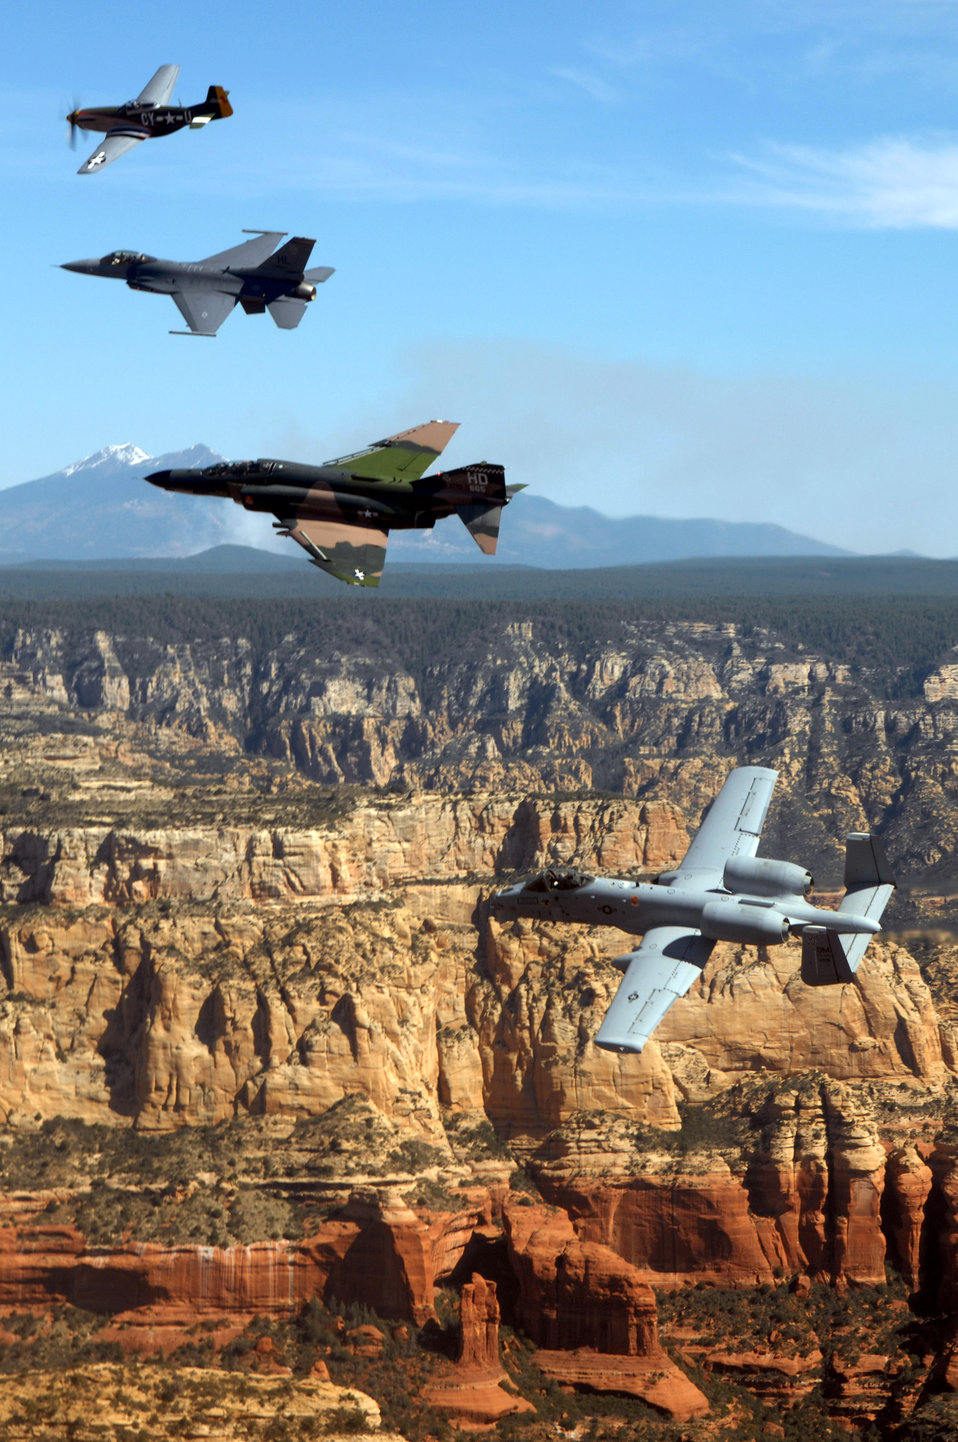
Planes of past and present soar over Sedona

An Air Force heritage flight consisting of a P-51 Mustang, an F-4 Phantom, an A-10 Thunderbolt and an F-16 Fighting Falcon fly over the Arizona desert on March 19 above Sadona. The flight was part of the events taking place in Phoenix for the first Air Force Week celebration of the year.